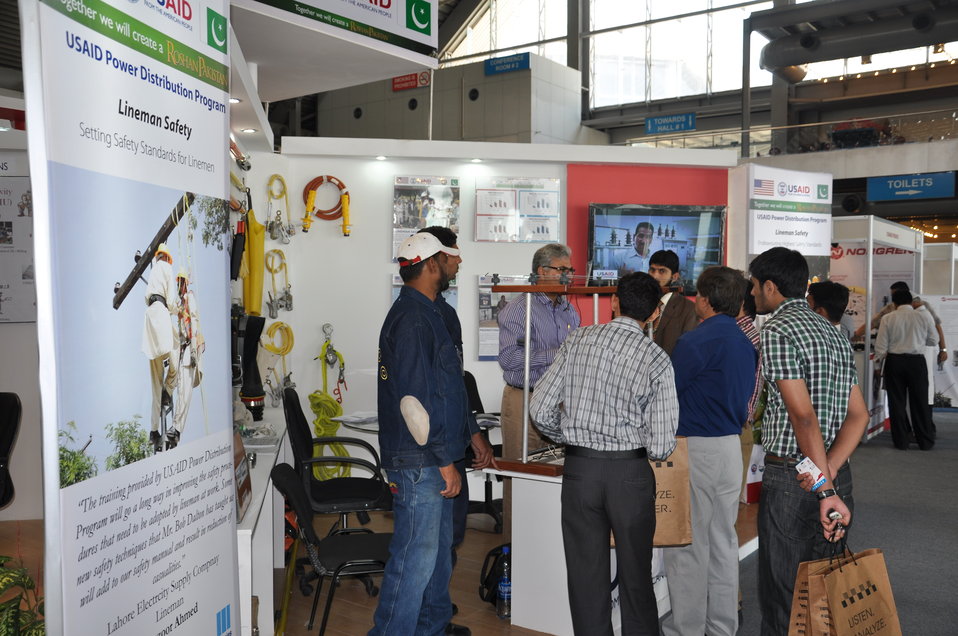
USAID participates in 11th International Pakistan Oil Gas Energy Exhibition

Visitors at the lineman safety stall are being briefed about the lineman safety tools and modern safety procedures.